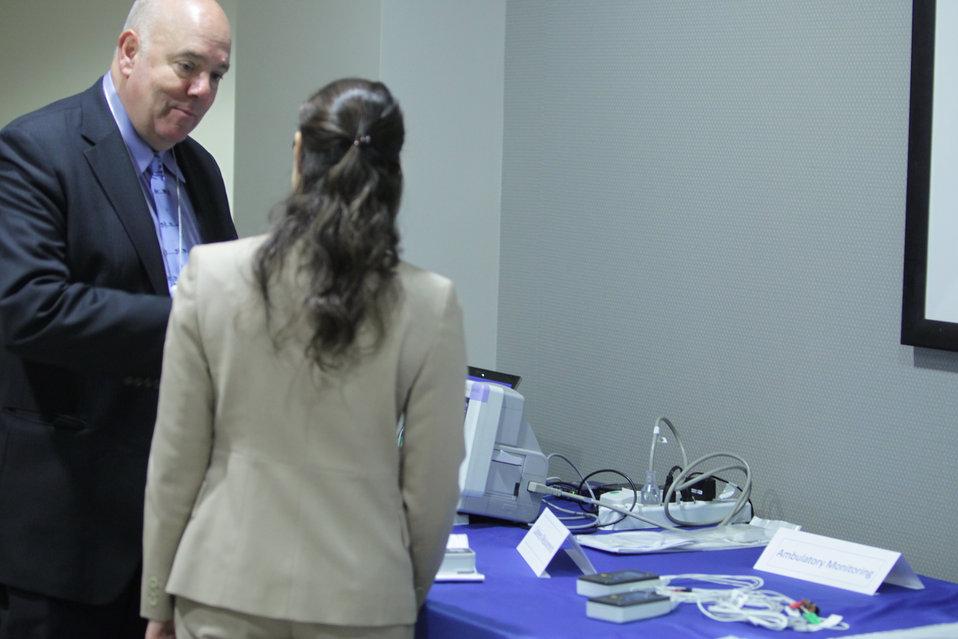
Industry Staff Demoing MBAN Tech

An industry staff demoing MBAN technology to attendee at George Washington University Hospital in Washington, DC.

May 17, 2012.